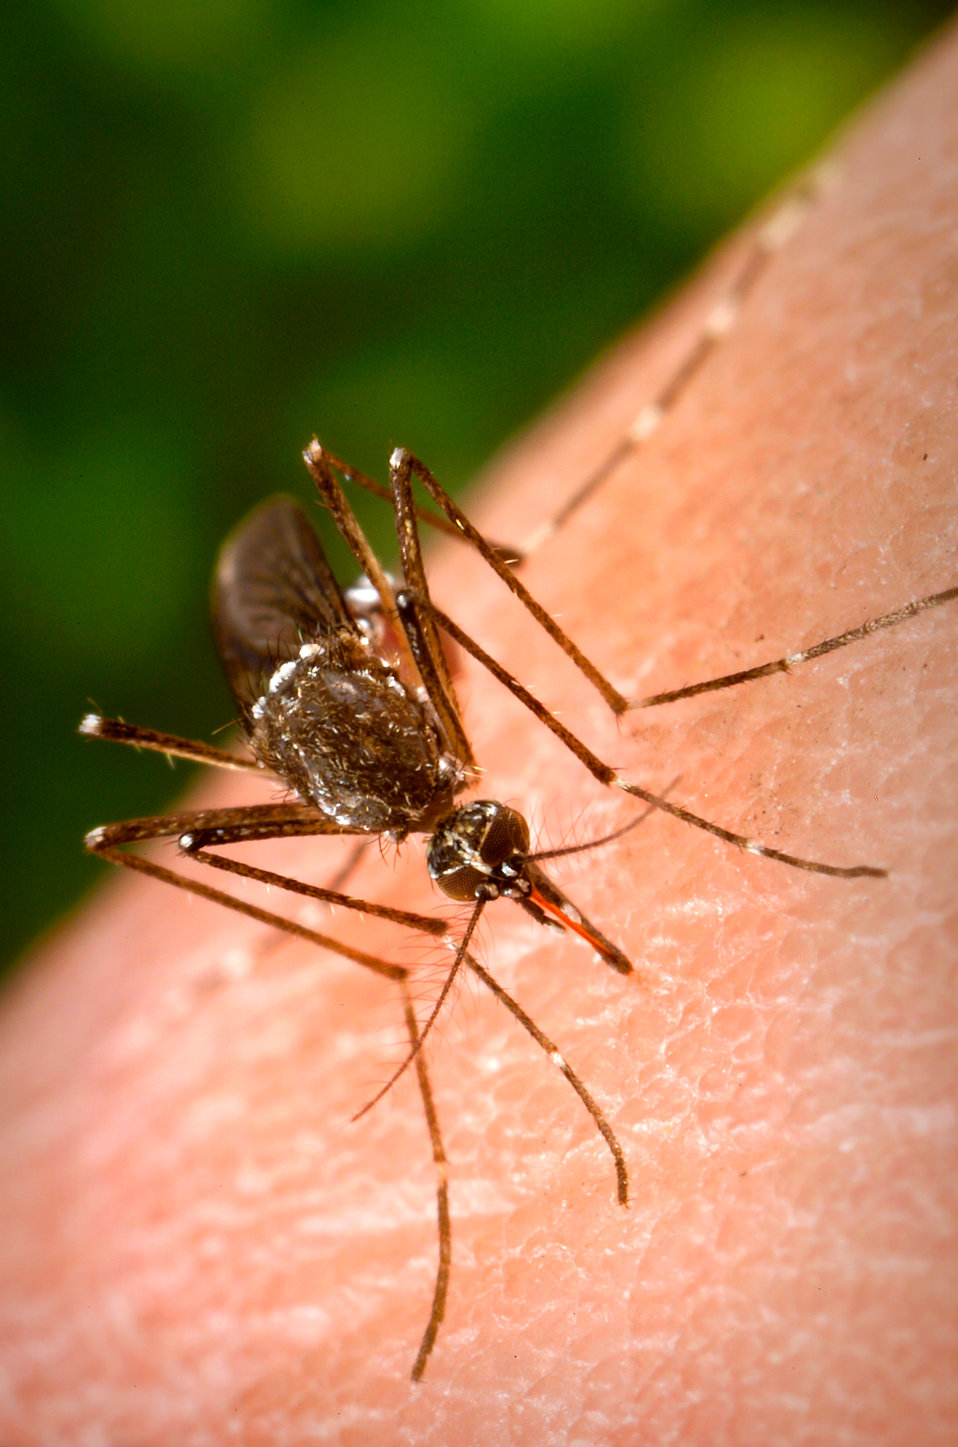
This 2006 image depicted a female Aedes aegypti mosquito as she was completing the activity of obtaining a blood-meal from a human host through her fascicle, here red in color due to the blood contained therein, which she'd begun to resheath in her labium. Both structures are part of her feeding organ known as the proboscis. In this case, what would normally be an unsuspecting host was actually the CDC's biomedical photographer's own hand, which he'd offered to the hungry mosquito so that she'd alight, and be photographed while feeding. As it filled with blood, the abdomen became distended, stretching the exterior exoskeletal surface, thereby, causing it to become transparent, allowing the collecting blood to become visible as an enlarging intra-abdominal red mass, as is the case in PHIL# 9175, and 9176.